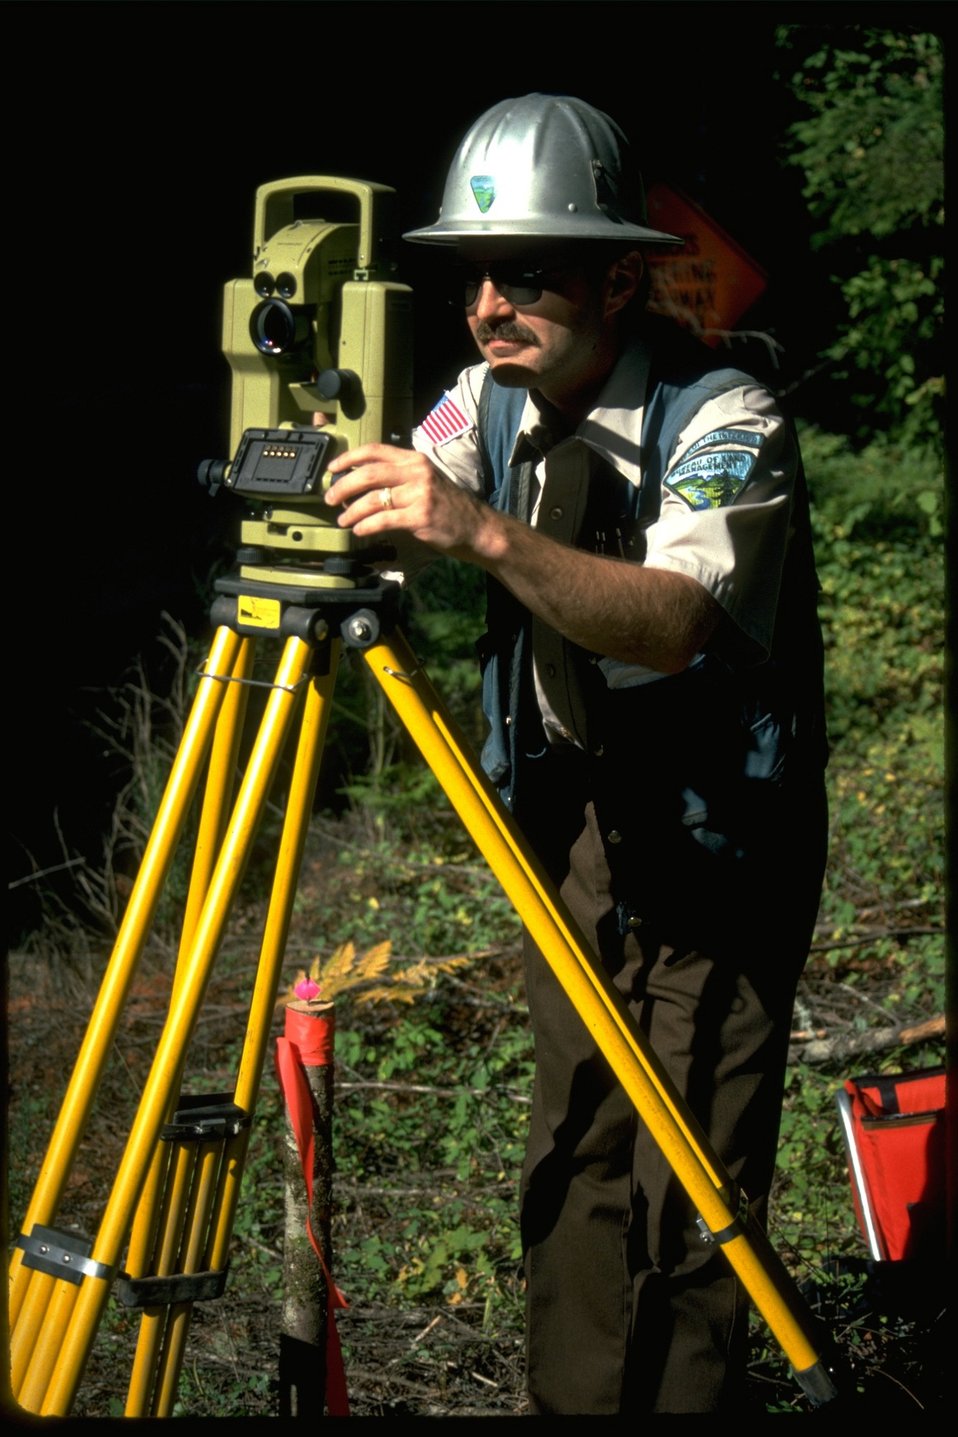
BLM Surveyor.